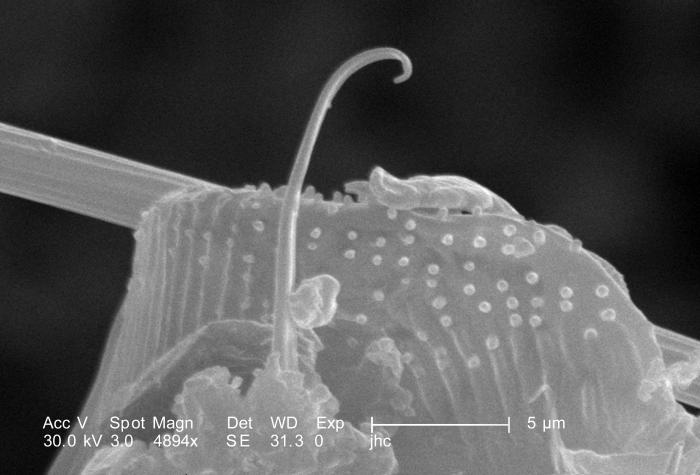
Highly magnified 4894X, this scanning electron micrograph (SEM) revealed some of the morphologic features located at the distal end of an unidentified 1/4"-sized black flying insect's leg. This arthropod also displayed a small red mark on its dorsum. Also notice in PHIL 9922, that there were two hooked appendages positioned in opposition to one another, which gave this organism a firm grasp of objects in its environment, in order to maneuver through its environment